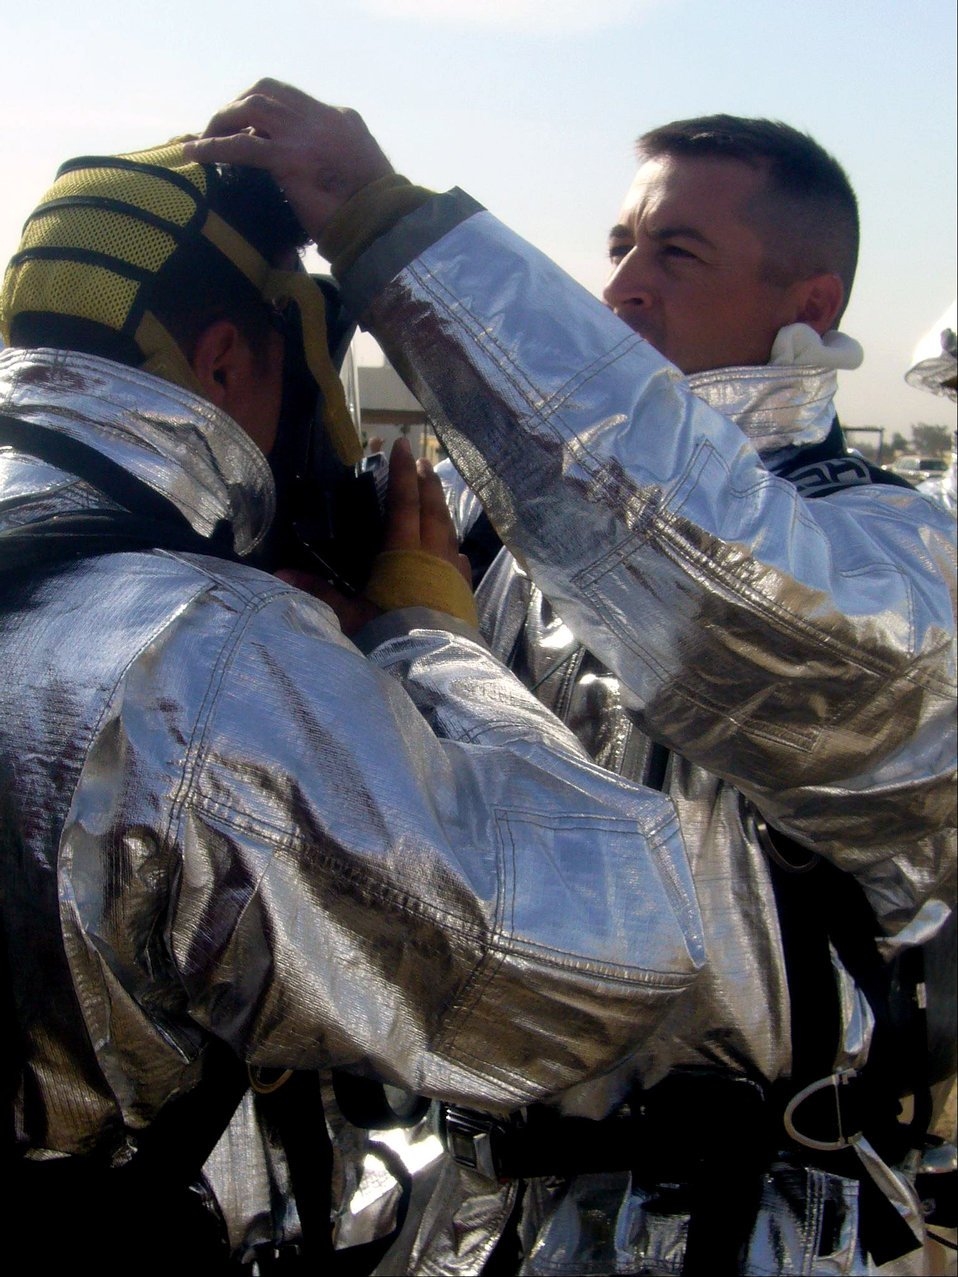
Iraqi Air Force Training School graduates firefighters, officers

Master Sgt. Philip Fourroux helps prep one of his students for a fire demonstration recently at the Iraqi Air Force Training School at Taji Air Force Base, Iraq. The first 10 Iraqi firefighters graduated from the school Dec. 11. Sergeant Fourroux is a 370th Expeditionary Training Squadron basic technical training fire instructor.